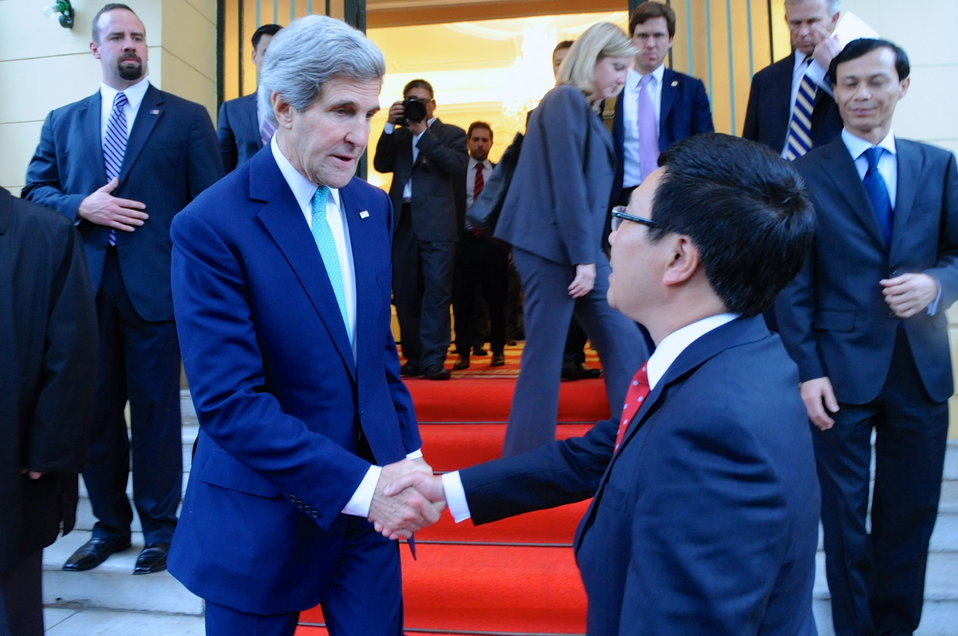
Secretary Kerry Bids Farewell to Vietnamese Foreign Minister Minh

U.S. Secretary of State John Kerry bids farewell to Vietnamese Foreign Minister Pham Binh Minh after a bilateral meeting and news conference in Hanoi, Vietnam, on December 16, 2013.